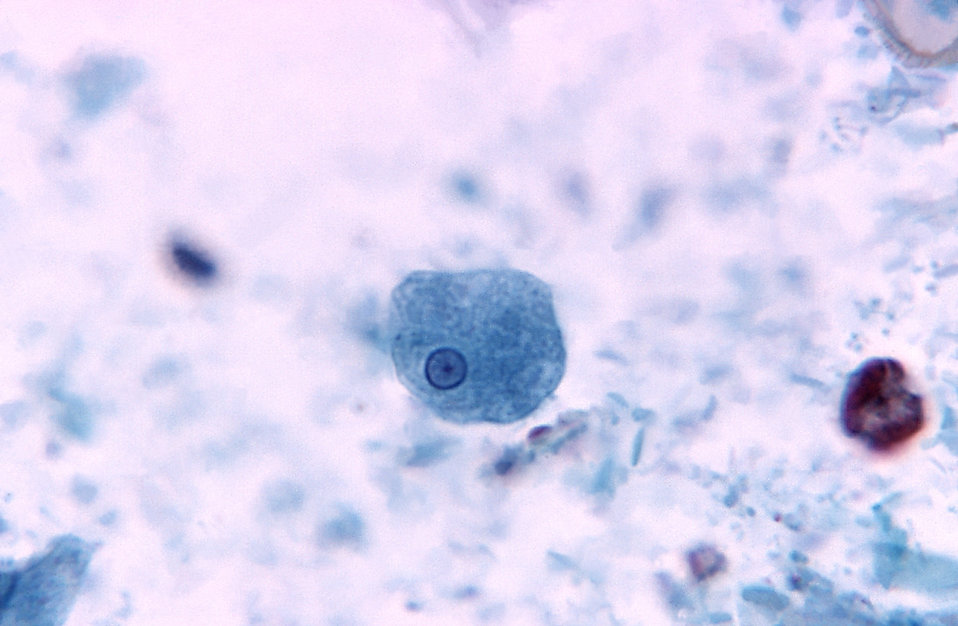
Entamoeba histolytica cyst.